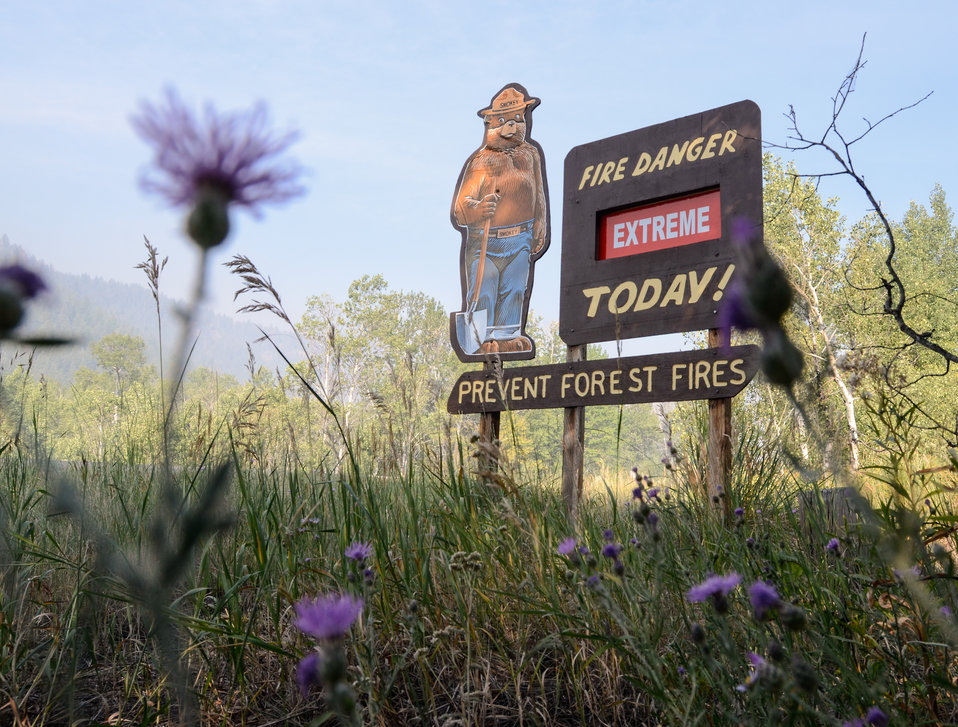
A road side Smokey Bear sign continues to tell motorists that the fire conditions are 'Extreme' today, during the Beaver Creek Fire, in the U.S. Department of Agriculture (USDA) Forest Service (FS) Sawtooth National Forest and Bureau of Land Management (BLM) lands, near Hailey, ID, on Tuesday, Aug 20, 2013.